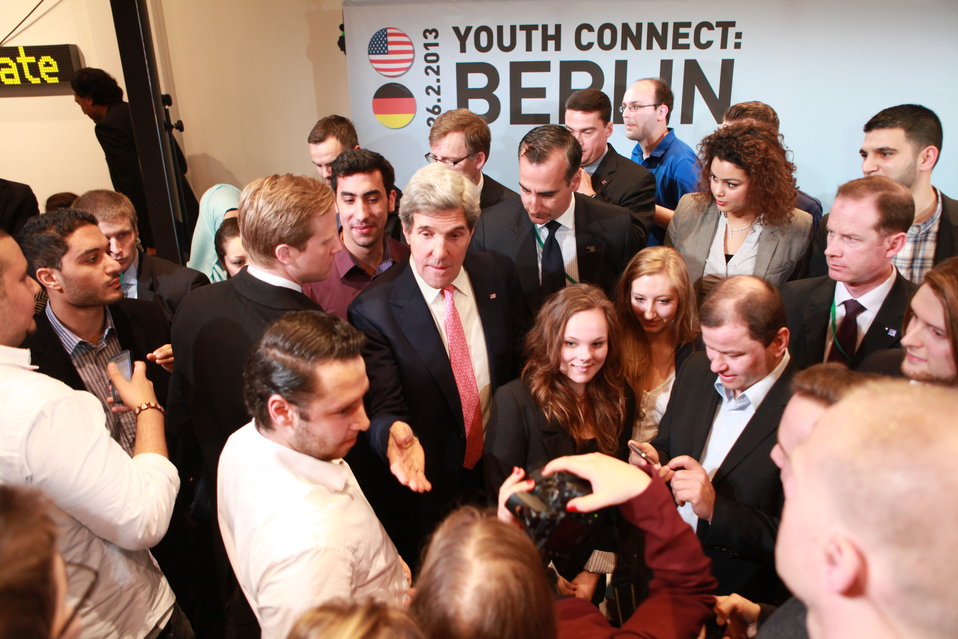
Secretary Kerry Engages Young German Innovators and Leaders in Berlin

U.S. Secretary of State John Kerry engages young German innovators and leaders at his first Youth Connect event with moderator/journalist Cherno Jobatey in Berlin, Germany, February 26, 2013.